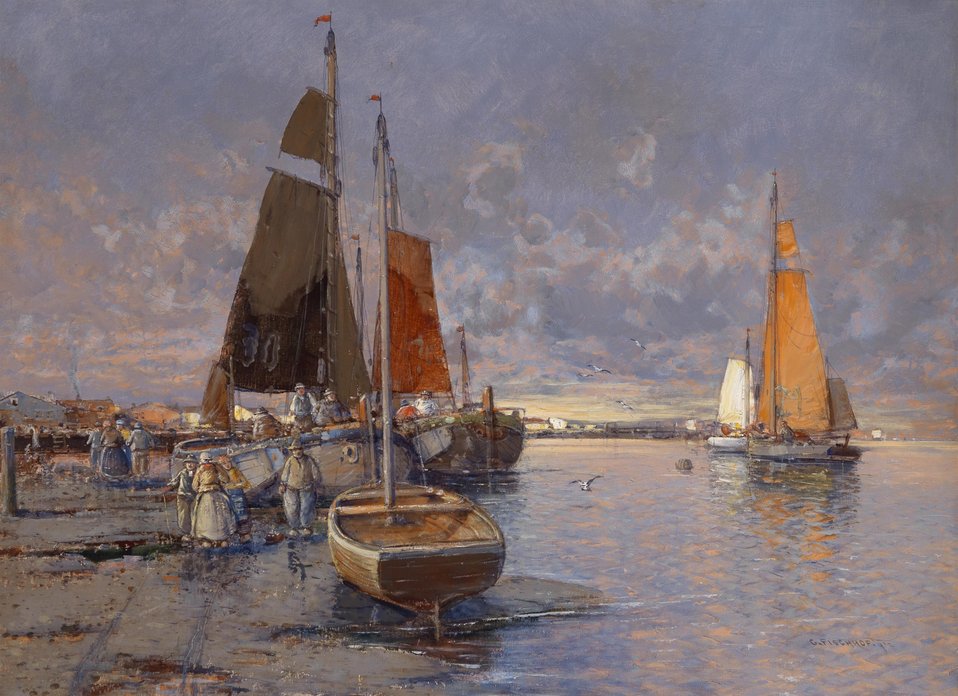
Deutsch: Fischer an der Mole im Abendrot, signiert, datiert G. Fischhof (1)902, Öl auf Leinwand, 74 x 100 cm